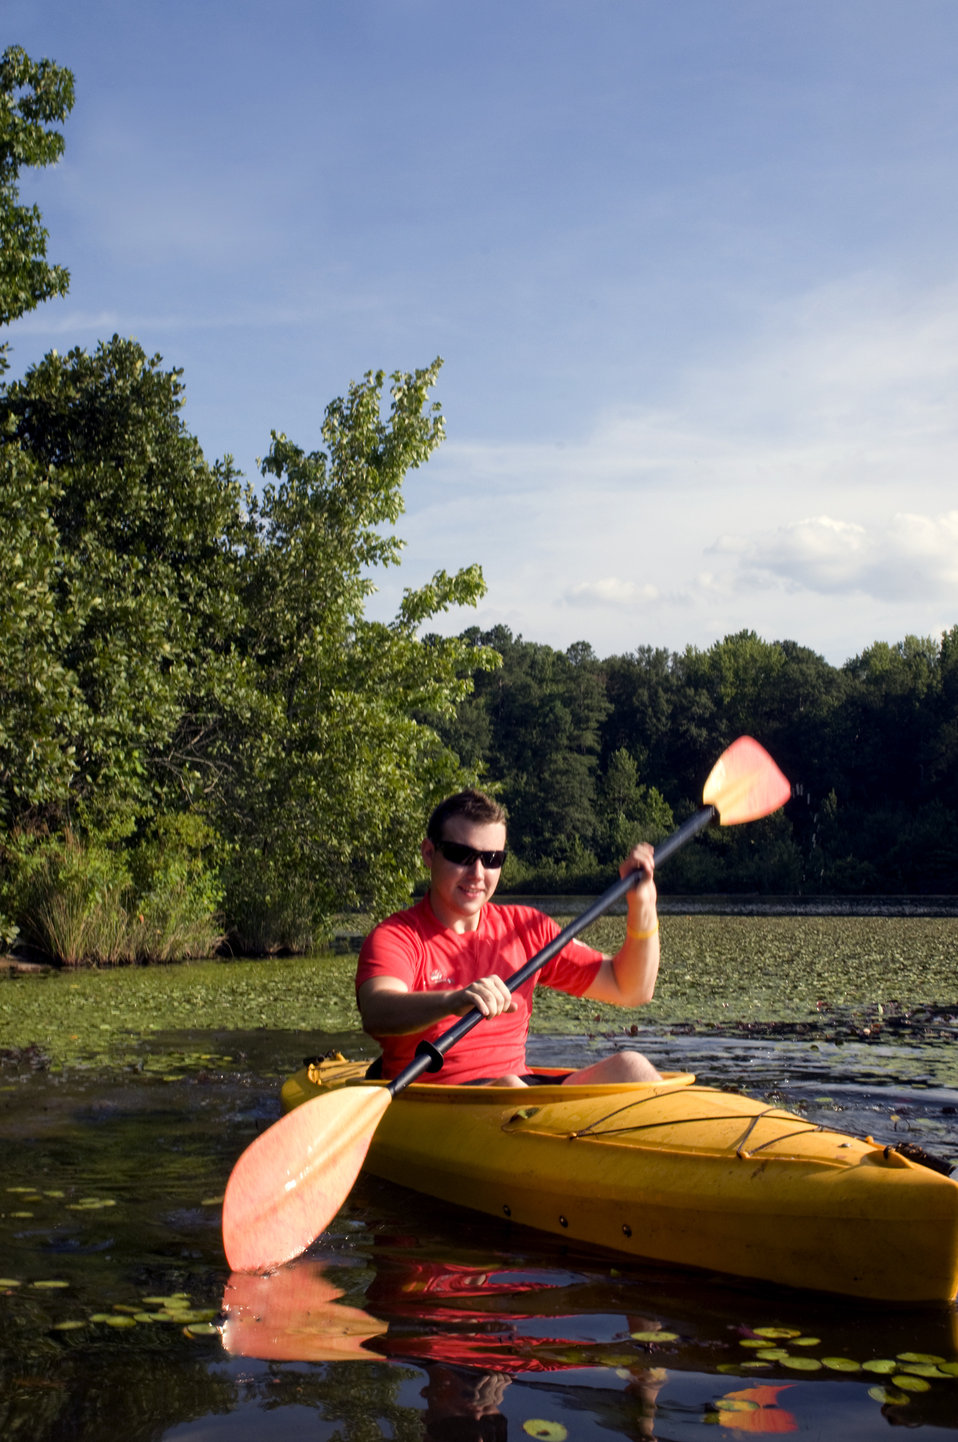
This man was kayaking atop a lily pad-covered lake in Georgia on what appeared to be a very sunny day. He smartly made the choice to wear a pair of dark sunglasses to protect his eyes from the sun's rays, and had applied sunscreen in order to protect his sun-exposed skin from harmful ultraviolet light as well. In the kayak, he'd packed some bottled water so as to avoid dehydration while out on the water.